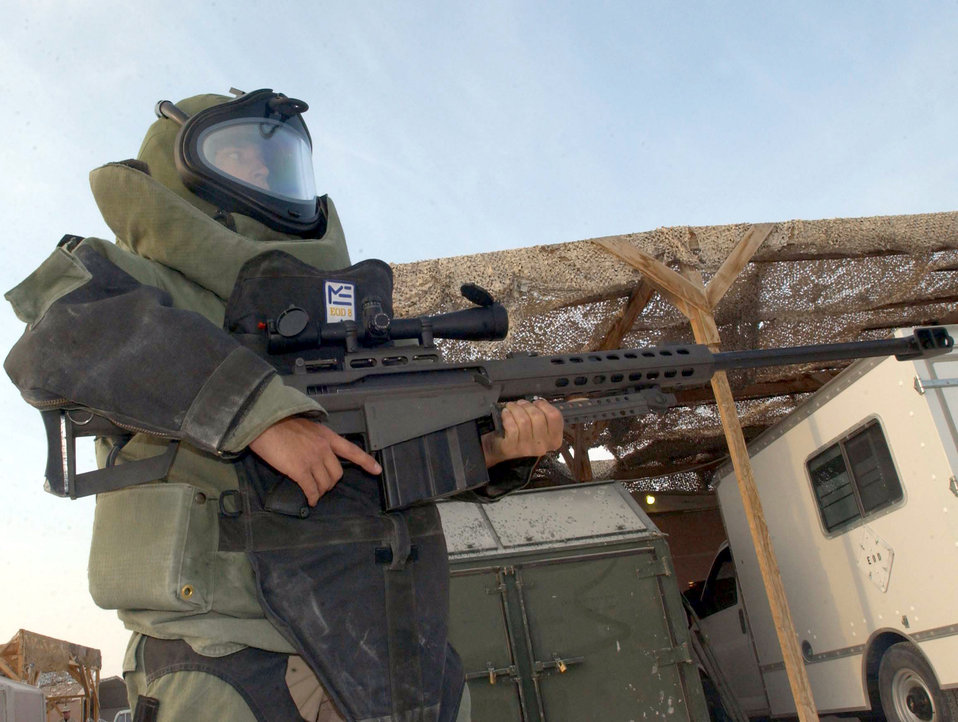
The Bombinator

SOUTHWEST ASIA -- Senior Airman Nathan Jones dons a bomb suit and mans a .50-caliber sniper weapon while performing required training at a forward-deployed location Jan. 5. Airman Jones is an explosive ordnance disposal technician with the 379th Expeditionary Civil Engineer Squadron.